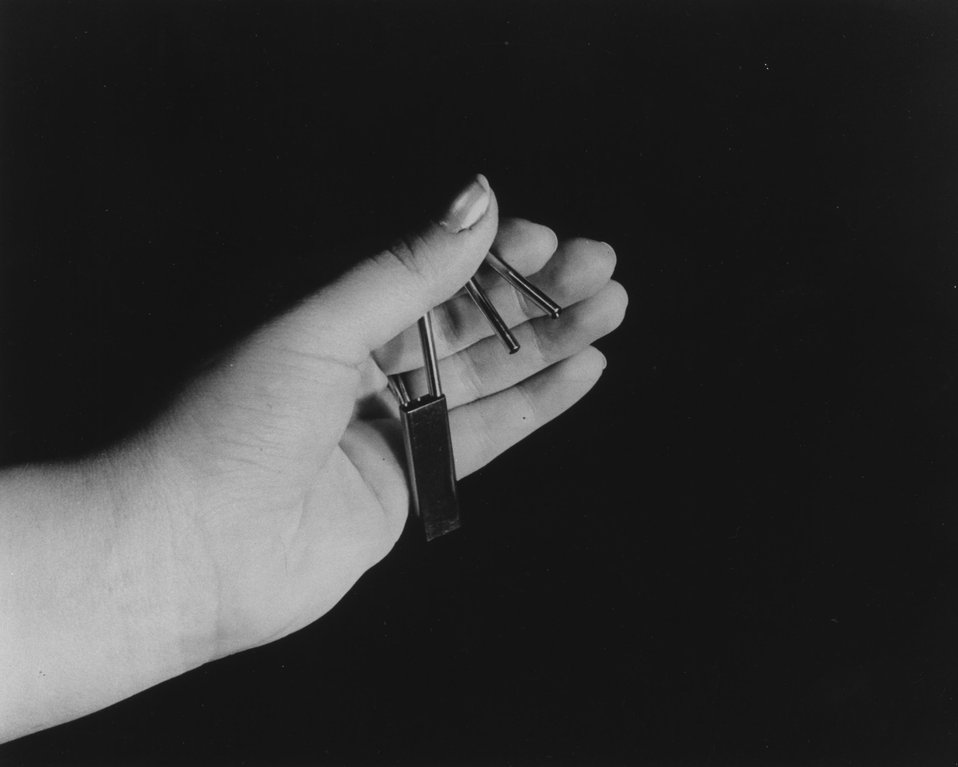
A plutonium-238 fueled thermoelectric generator, coupled with conventional pacemaker electronic circuits, is being developed for the AEC by the Nuclear Materials and Equipment Corp. (NUMEC), Apollo, Pennsylvania. Circa 1968.